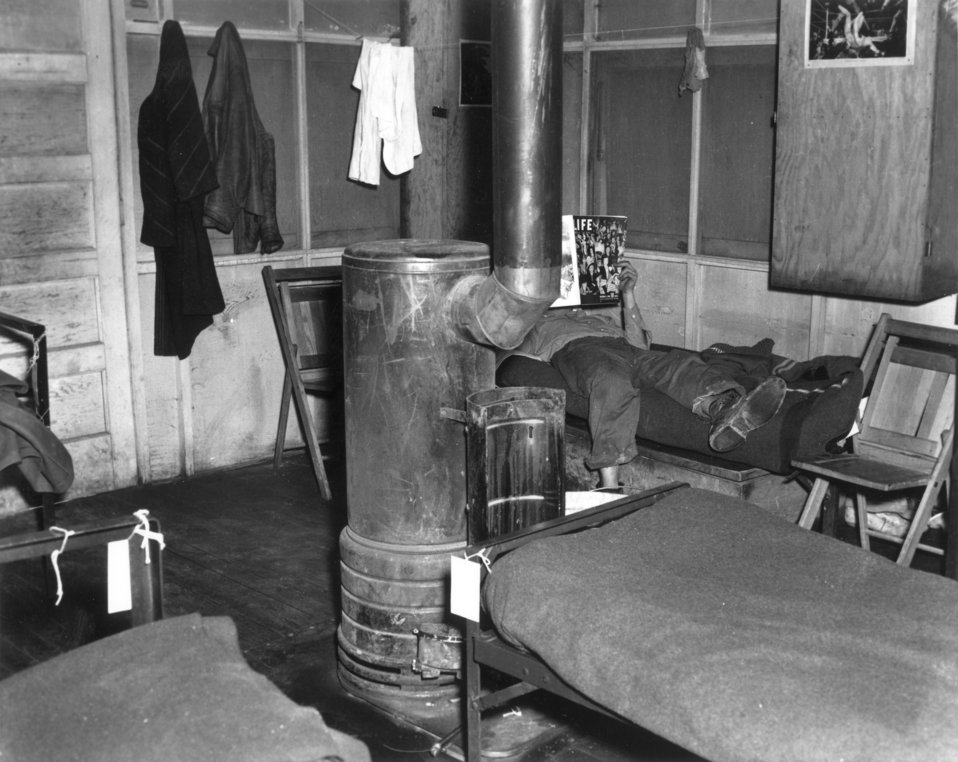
CEW Housing- Hutment- interior Oak Ridge

314-3 DOE photo by Ed Westcott

CEW Housing- Hutment- interior Oak Ridge Tennessee 2/1945